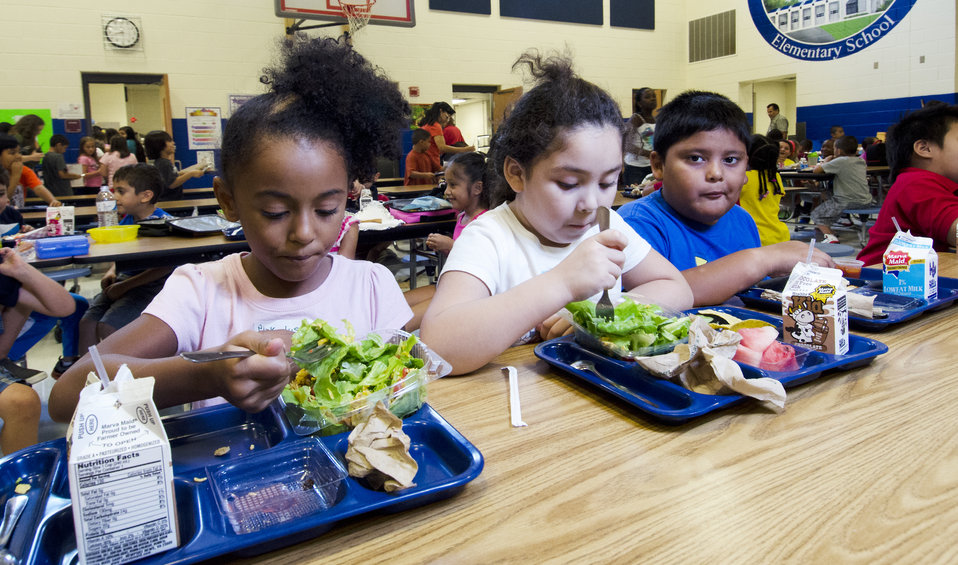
School lunch staff and students enjoy the new school lunch menu created to meet the new standards at the Yorkshire Elementary School in Manassas, VA on Friday, Sept. 7, 2012.